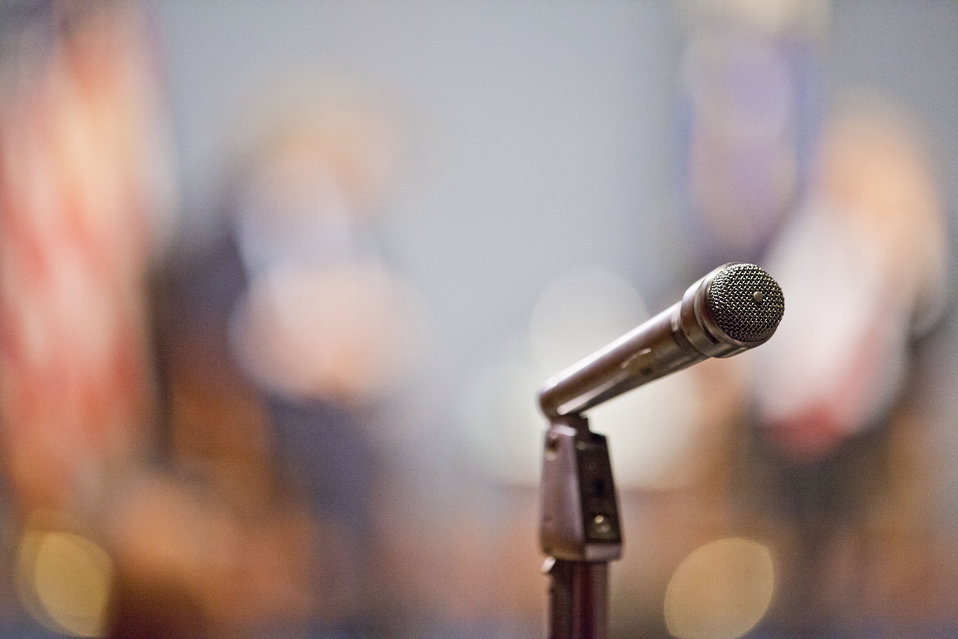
DOE Town Hall

On May 22, 2013, newly sworn-in Energy Secretary Dr. Ernest Moniz opened up a town hall forum. DOE employees were invited to attend, and submit questions to staff.